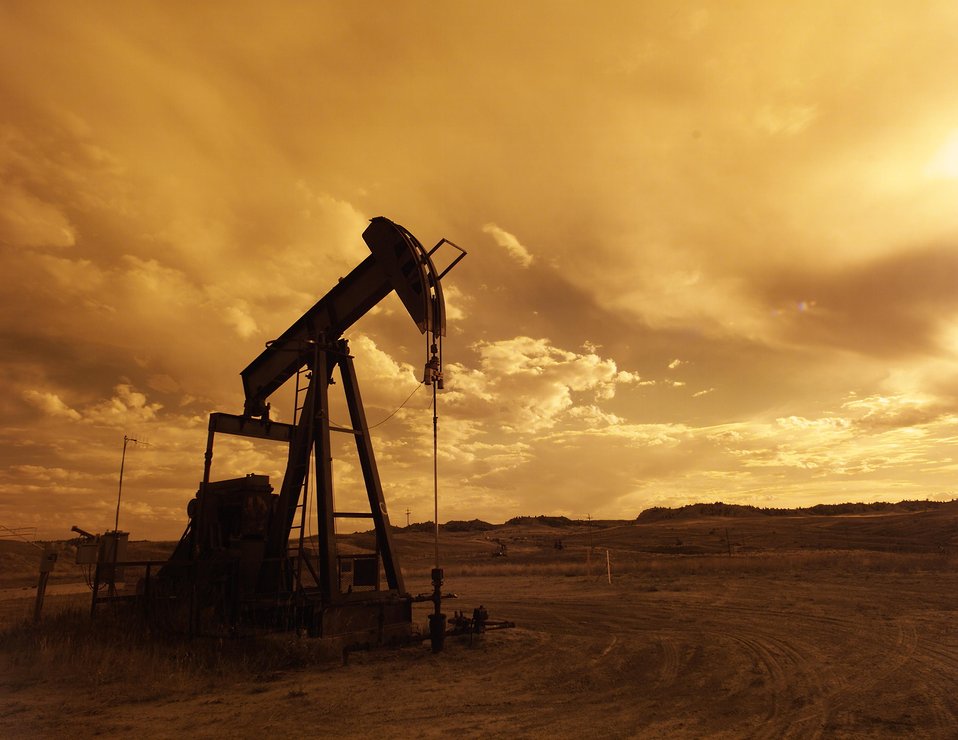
A pump jack is silhouetted against the sunset at Naval Petroleum Reserve No.3 (NPR-3) near Casper, Wyoming.

The Rocky Mountain Oilfield Testing Center (RMOTC) is a Department of Energy field test site for emerging and developing technologies to address critical energy issues. The field test site, located on Naval Petroleum Reserve No.3 (NPR-3), is a 10,000-acre site. There are approximately 700 well bores with 600 producing wells ranging in depth from 500 to 5,000 feet.